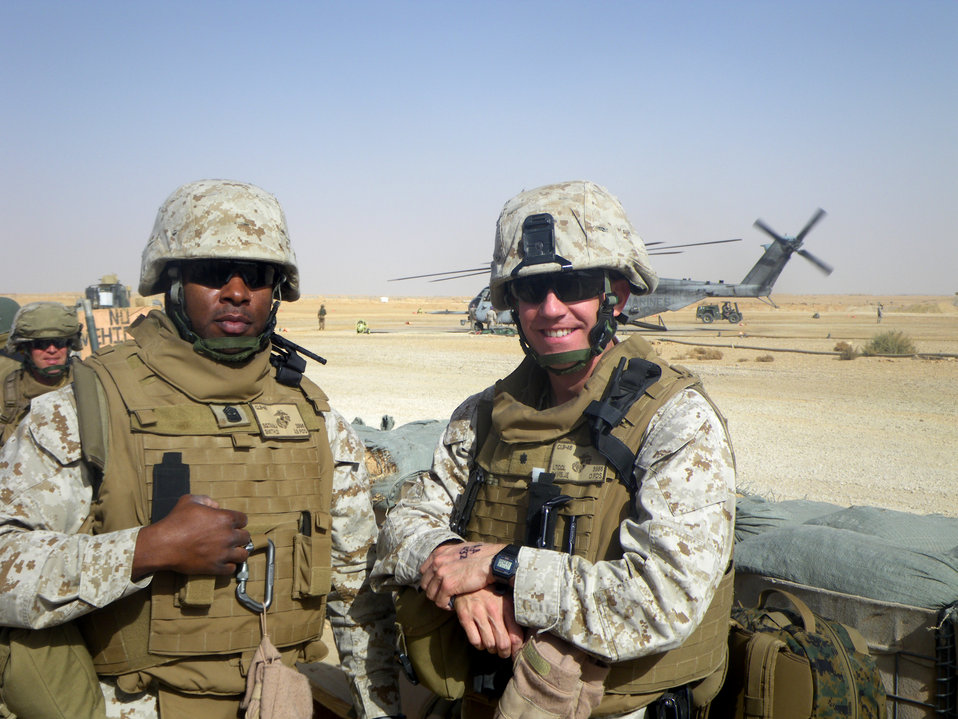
Eric Davis

Lieutenant Colonel Eric Davis (right), the project leader for the New Jersey Field Office, has served with the Marine Corps for 21 years. He spent his most recent tour of duty in Iraq with Marine Corps Combat Logistics Battalion 46, a squadron of 900 marines and sailors providing full logistical support for all Marines in Iraq. Davis commanded the last Marine Corps battalion in Iraq and returned home in 2010. His first tour of duty was on the first plane into Mogadishu in December 1992.